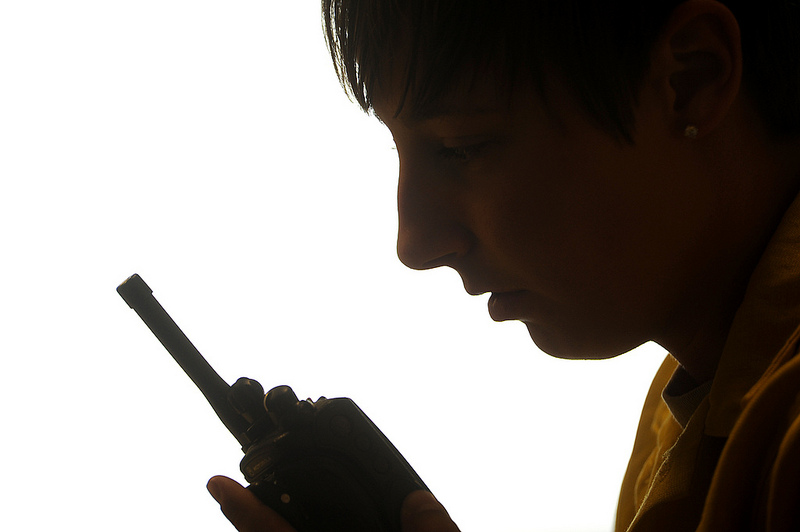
Academy firefighters battle Waldo Canyon fire

U.S. Air Force Academy firefighter Staff Sgt. Nicole Longwell dispatches firefighting teams to relieve team members during the Waldo Canyon Fire at the Academy on June 27, 2012. Currently, more than 90 firefighters from the Academy, along with assets from Air Force Space Command; F.E. Warren Air Force Base, Wyo.; Fort Carson, Colo.; and the local community continue to fight the fire. Longwell is assigned to the 10th Civil Engineer Squadron.